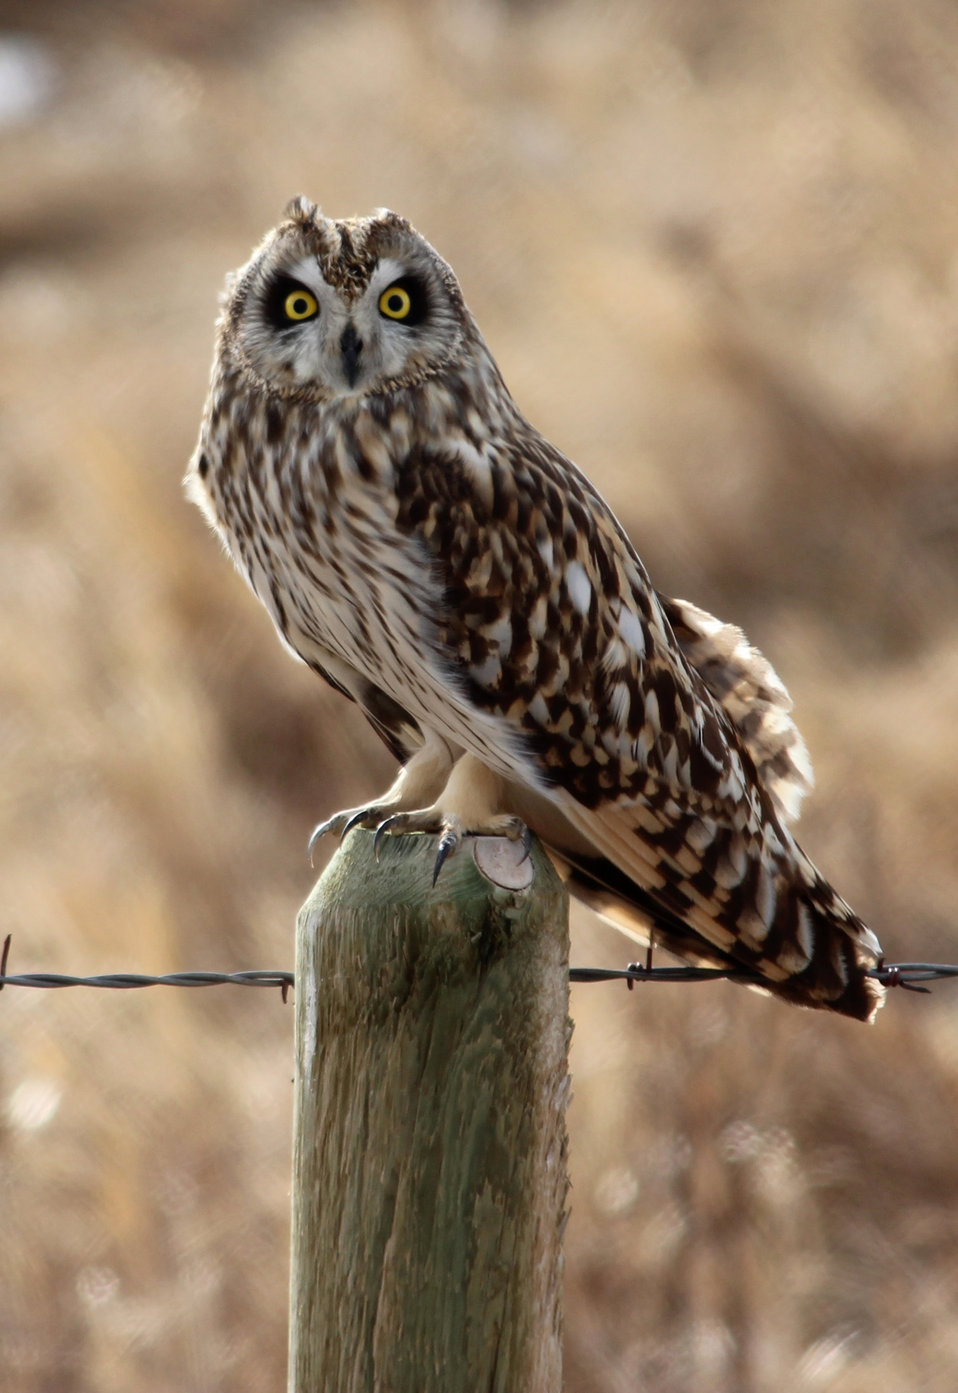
A Piercing Gaze

The Short-eared owl, a partially diurnal owl, can be seen hunting over open fields, meadows, and marshes. This female is perched on a fence in McIntosh County, North Dakota. Surprisingly, this owl nests on the ground in grasslands. Unfortunately, its numbers are in decline due to loss of habitat and grassland conversion.